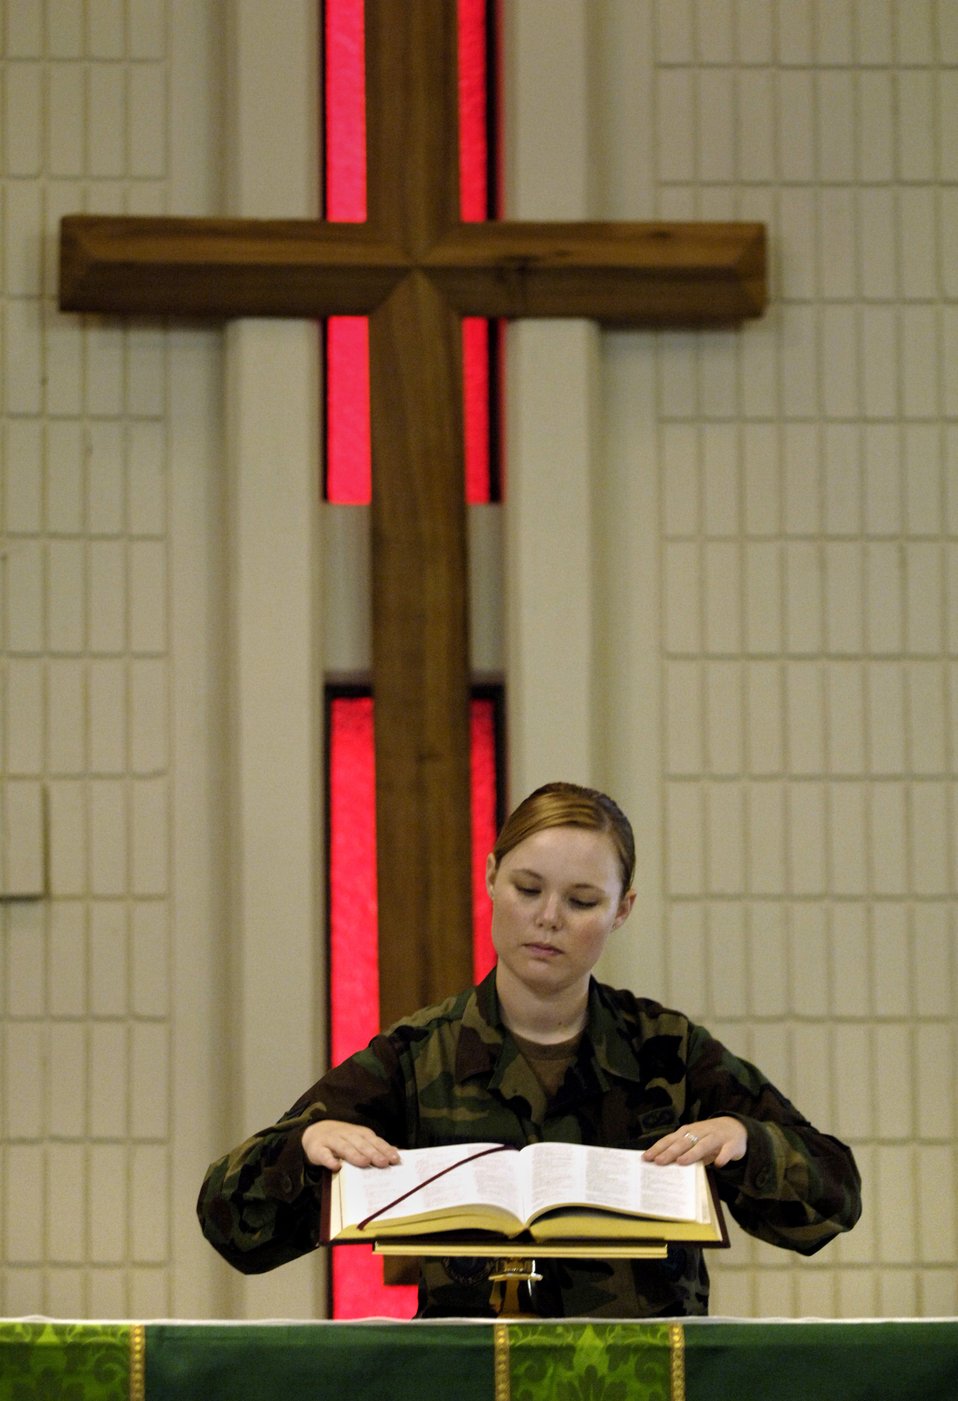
Chapel worker attending ball on Air Force birthday

Senior Airman Melissa Harrington places a Bible on the altar of the base chapel at Hickam Air Force Base, Hawaii, Sept. 18. Airman Harrington is a chaplain's assistant for the 15th Airlift Wing.